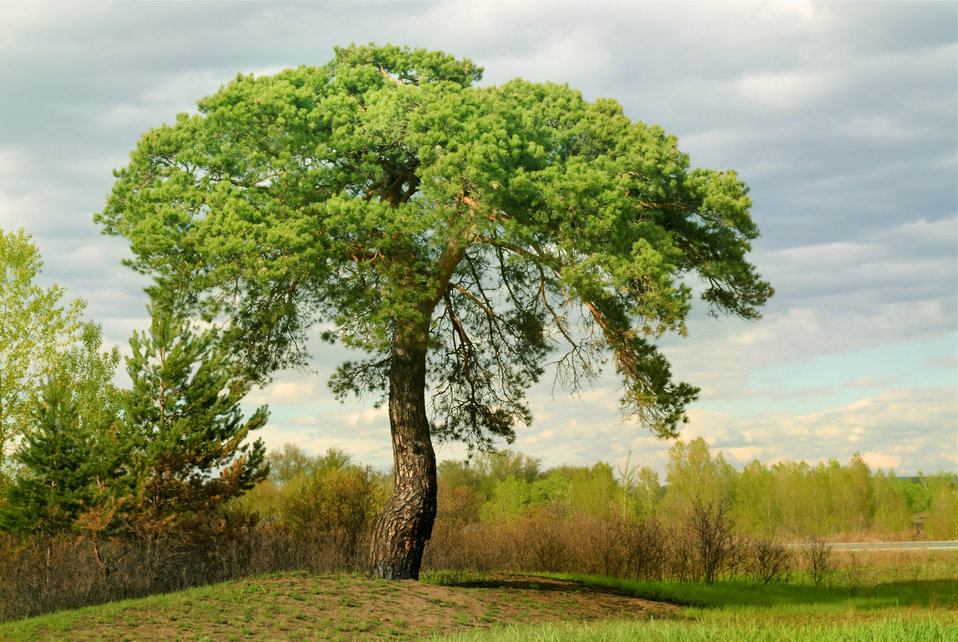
A pine tree in a field

A large pine tree in the background of the cloudy sky.